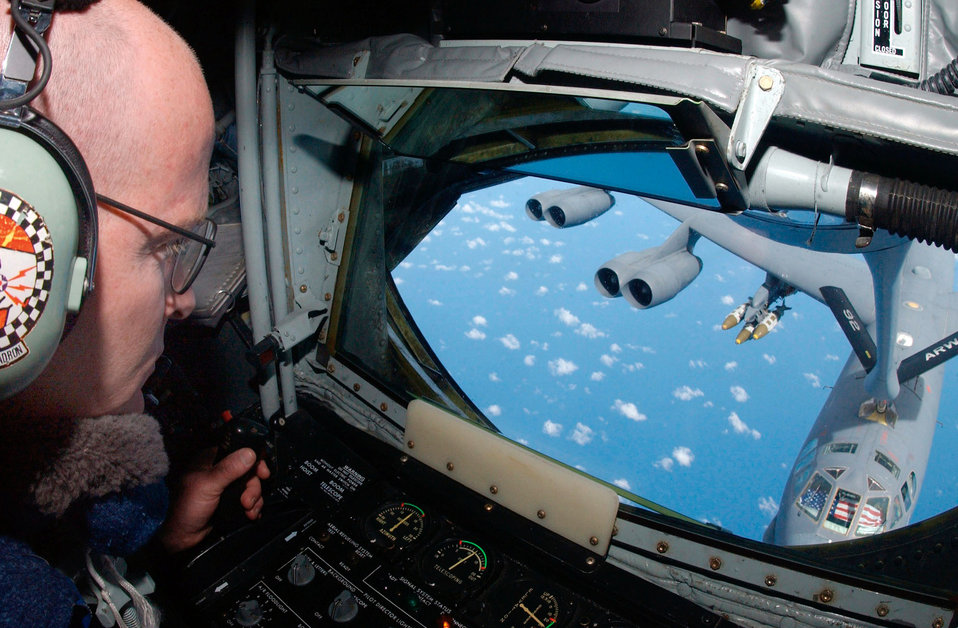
Fueling the fight

OPERATION ENDURING FREEDOM -- Staff Sgt. Bob Spychalski, a KC-135 Stratotanker boom operator, 28th Expeditionary Air Refueling Squadron, prepares to refuel a B-52 Stratofortress on its way to Afghanistan, May 7, 2003.